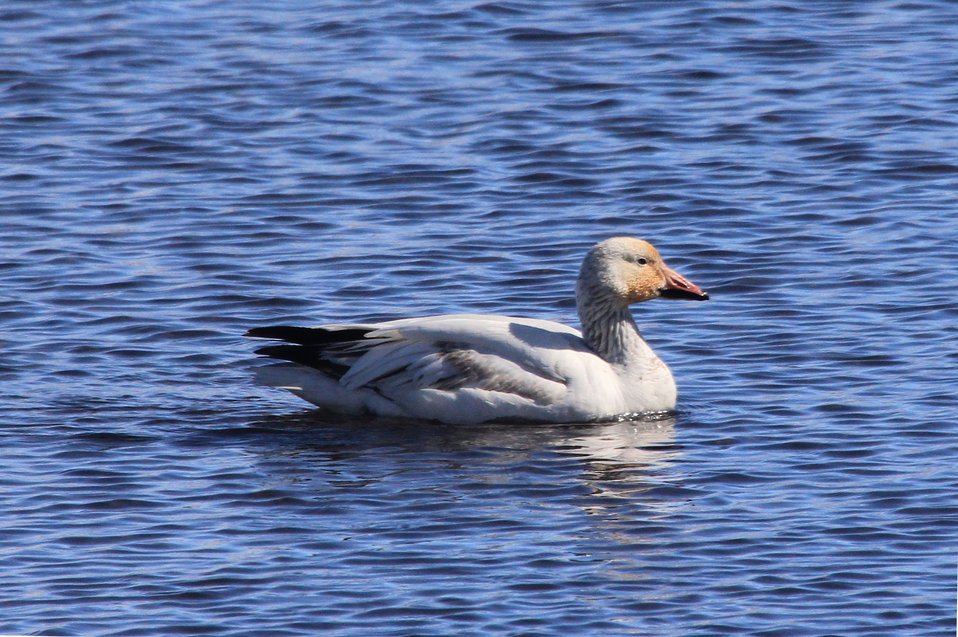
Snow Goose Visitor

The Snow Goose is a white-bodied goose with black wingtips. This photo from the National Elk Refuge clearly captures the characteristic pink bill with a dark line along it, often called a 'grinning patch' or 'black lips.'

Credit: USFWS / Ann Hough, National Elk Refuge volunteer